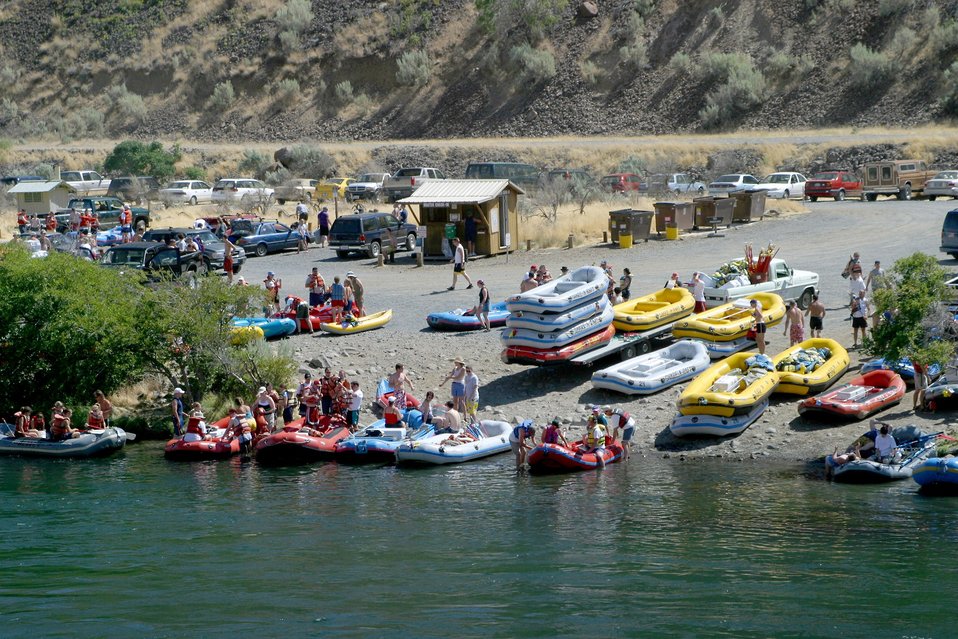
Over 200,000 people a year float the Lower Deshutes River.